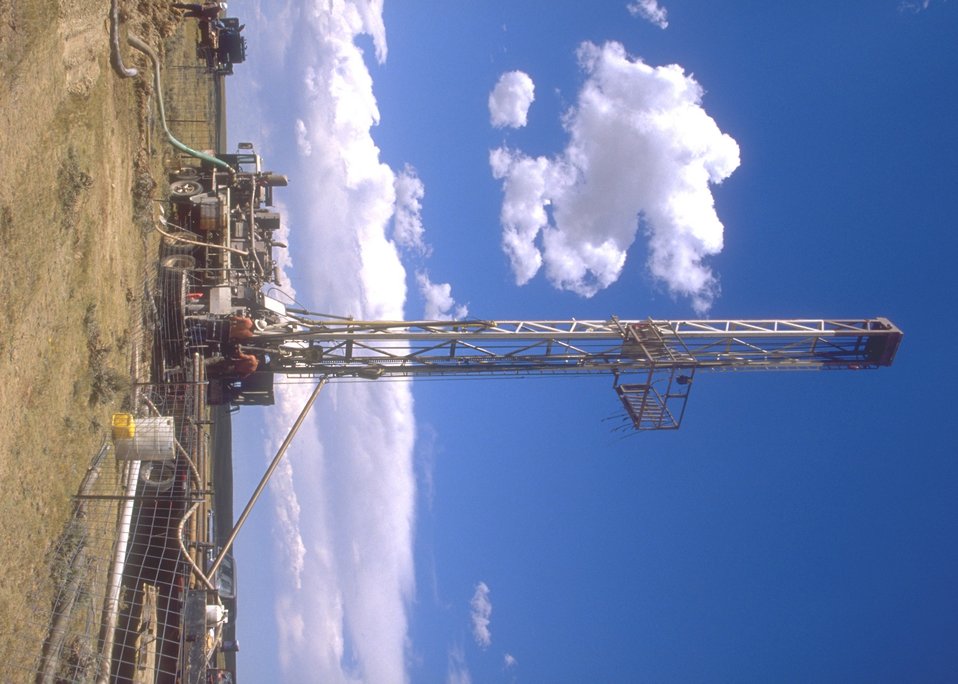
Drill site for coal bed methane, Buffalo Field Office.